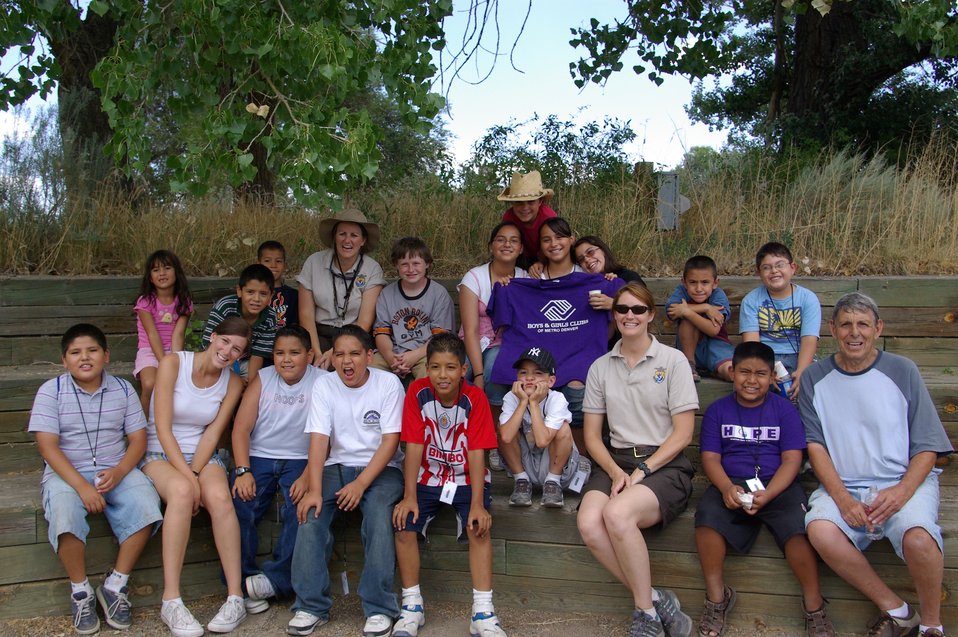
Rocky Mountain Arsenal National Wildlife Refuge

Commerce City Boys and Girls Club, Summer Camp comes and visits the Rocky Mountain Arsenal for some educational fun in the sun!